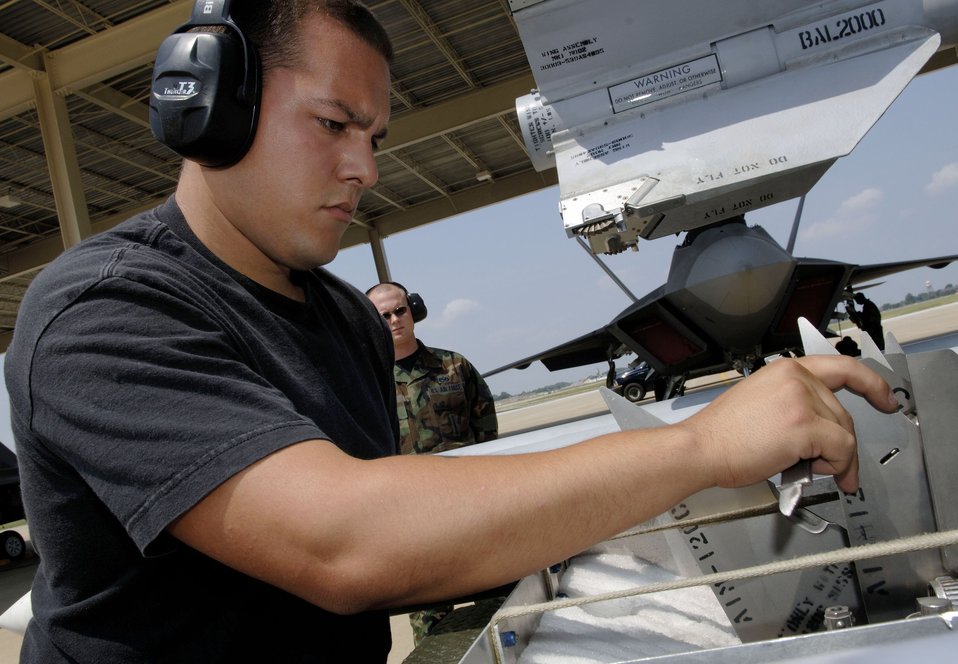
Raptor crews

Senior Airman Rafael Hernandez inspects the fin assembly for an AIM-120 missile during a weapons load inspection at Langley Air Force Base, Va., on Aug. 15. Airman Hernandez is a weapons load crew member with the 27th Aircraft Maintenance Unit.